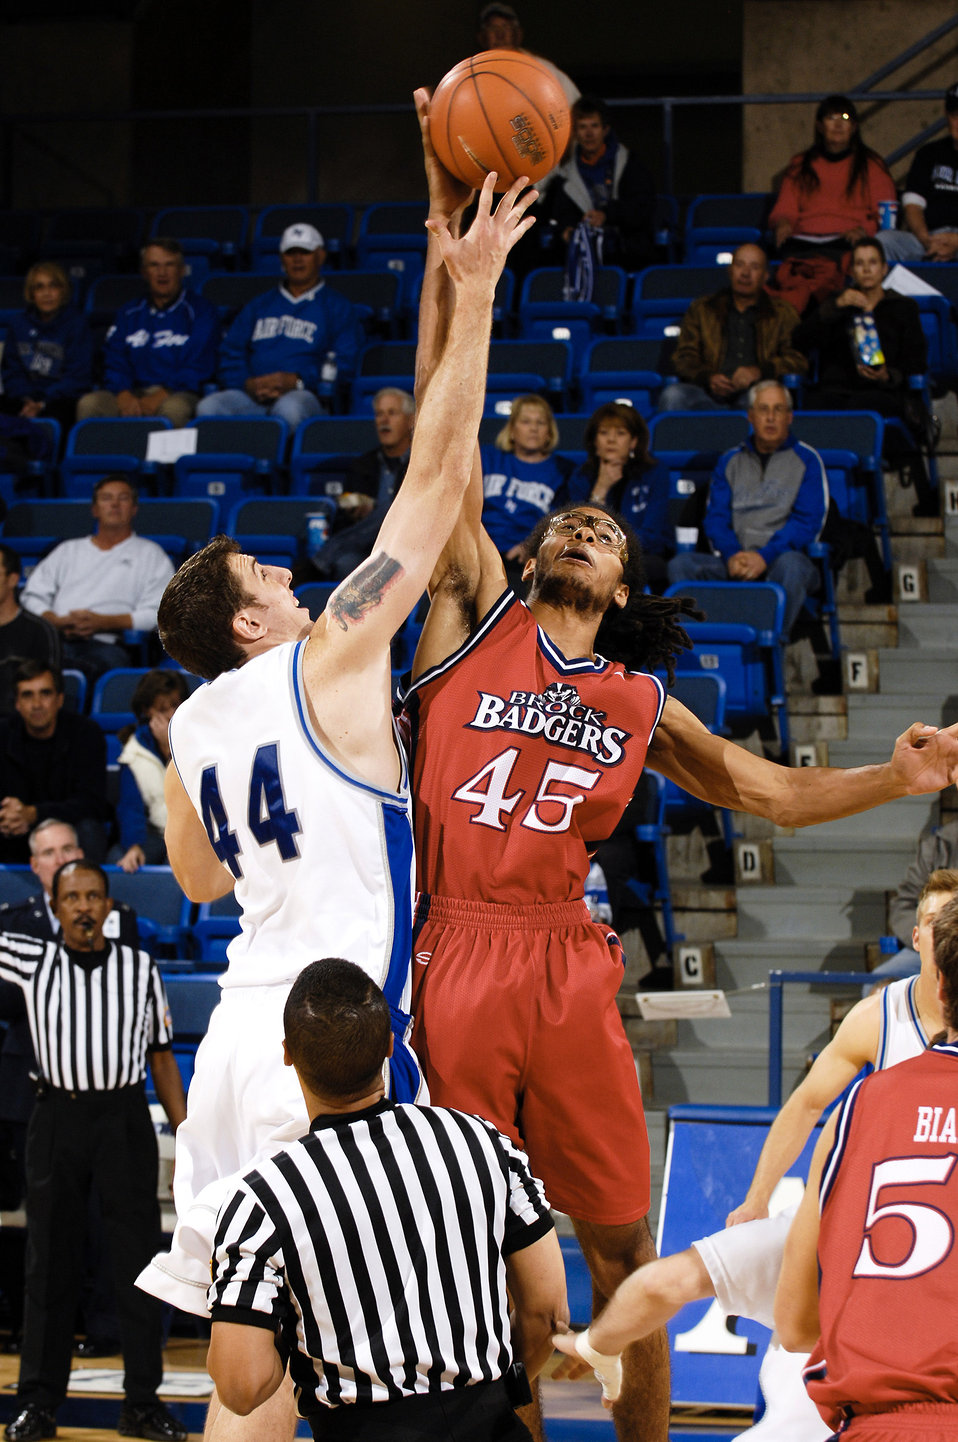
Air Force falls to Brock University, 66-63, in exhibition men's basketball

Senior Keith Maren tips off to start the Brock University exhibition basketball game at the academy's Clune Arena. Maren pulled down a game-high 11 rebounds as Air Force was defeated 66-63. The Falcons open the 2007-08 regular season on Nov. 9 in the Air Force Classic at Clune Arena.